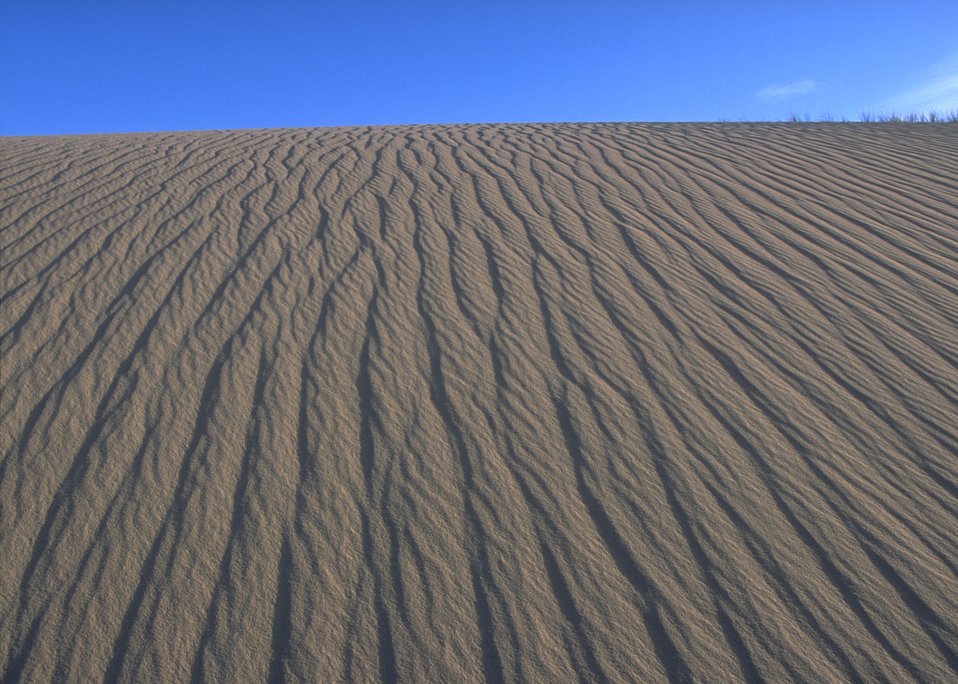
Sand dunes along the Alcova/Seminoe Back Country Byway, Rawlins Field Office.